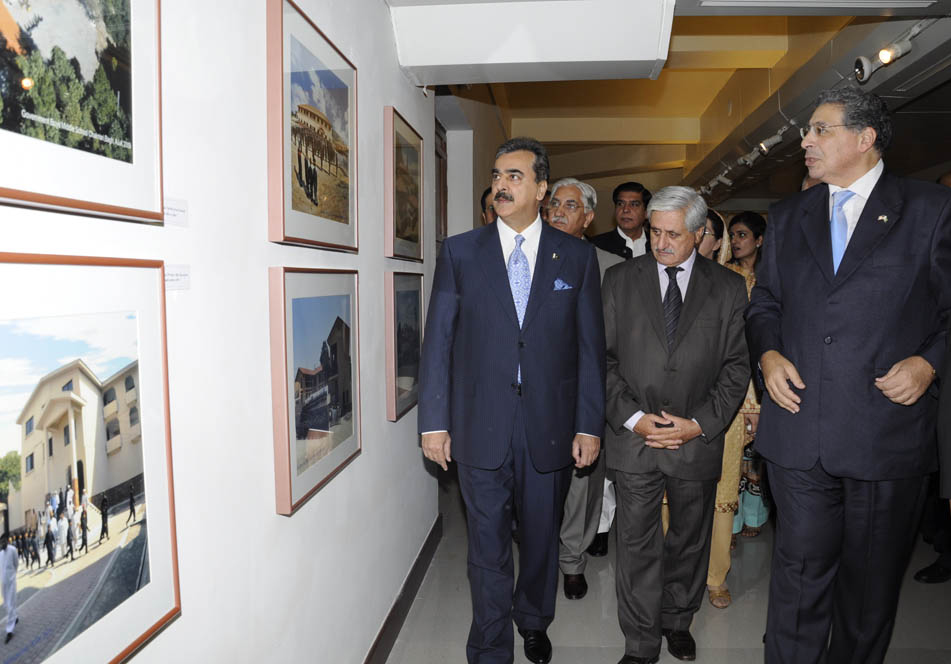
Photography and Drawing Exhibition on Pakistan 2005 Earthquake “Rebuilding Together: With Dignity and Hope”

Syed Yousuf Raza Gilani, Prime Minister of Pakistan, visiting a photo exhibition 'Rebuilding Together: With Dignity and Hope' sponsored by USAID at Pakistan National Council of Arts (PNCA) in Islamabad.